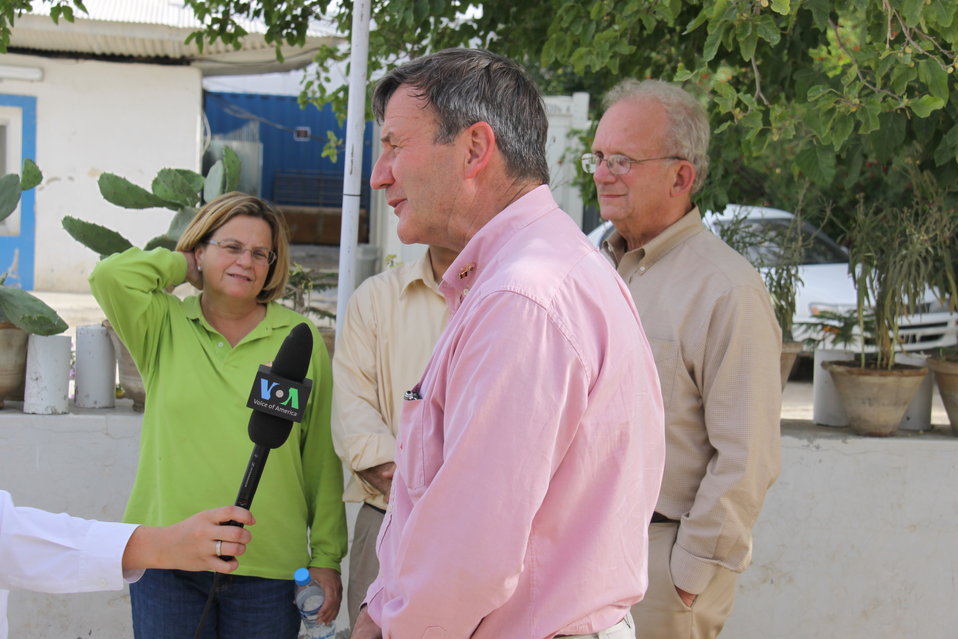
Meeting with Local Leaders in Kandahar